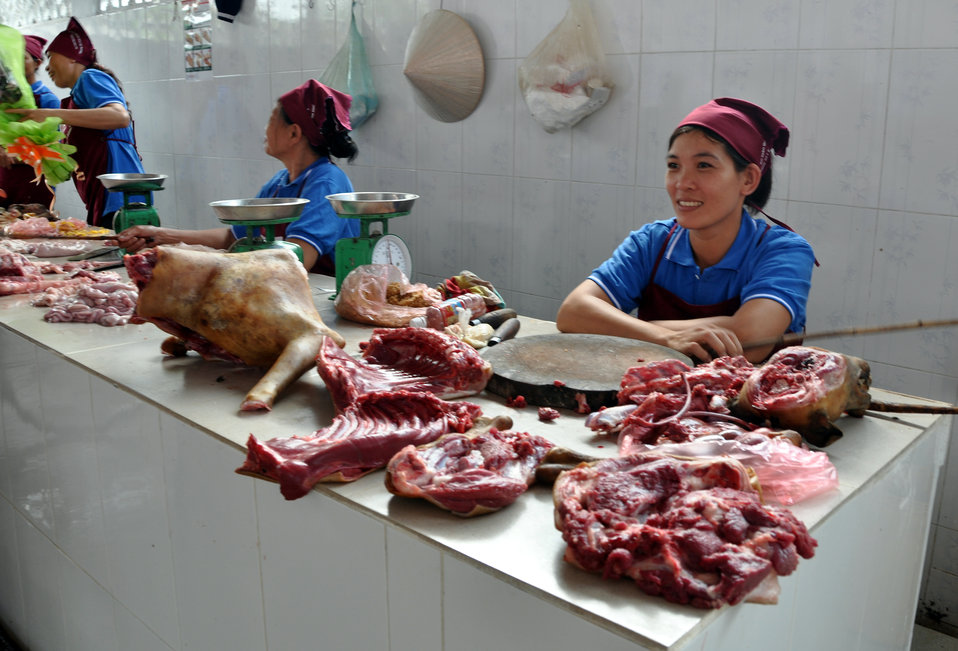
Handover Ceremony Hoa Mac Market Ha Nam

October 26, 2012